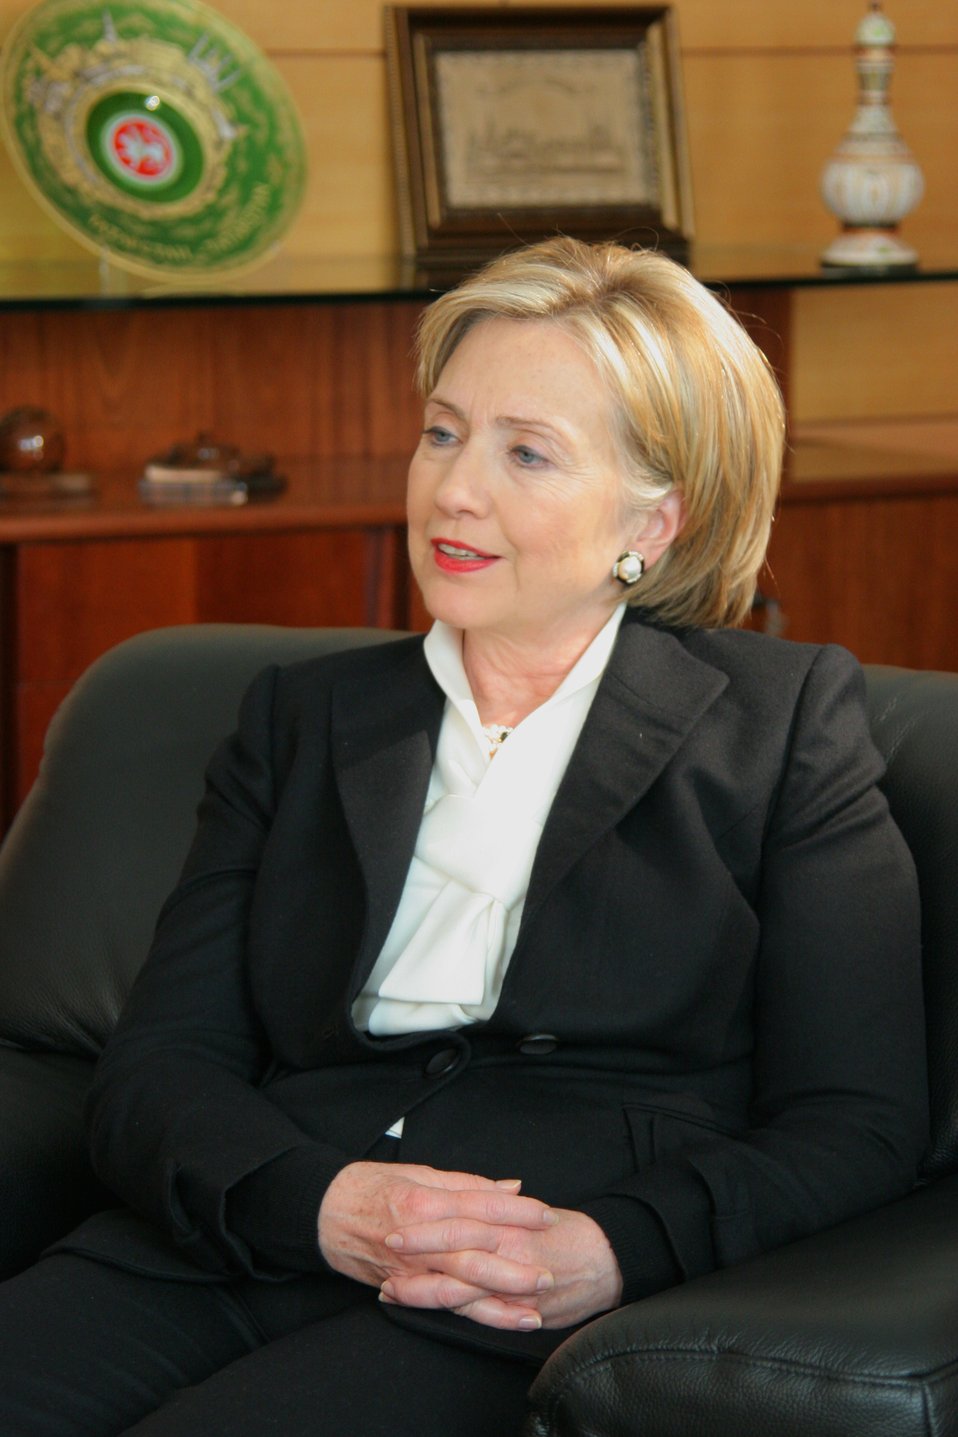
Secretary Clinton Answers Questions

U.S. Secretary of State Hillary Rodham Clinton answers questions for a television news interview in Kazan, Russia October 14, 2009.